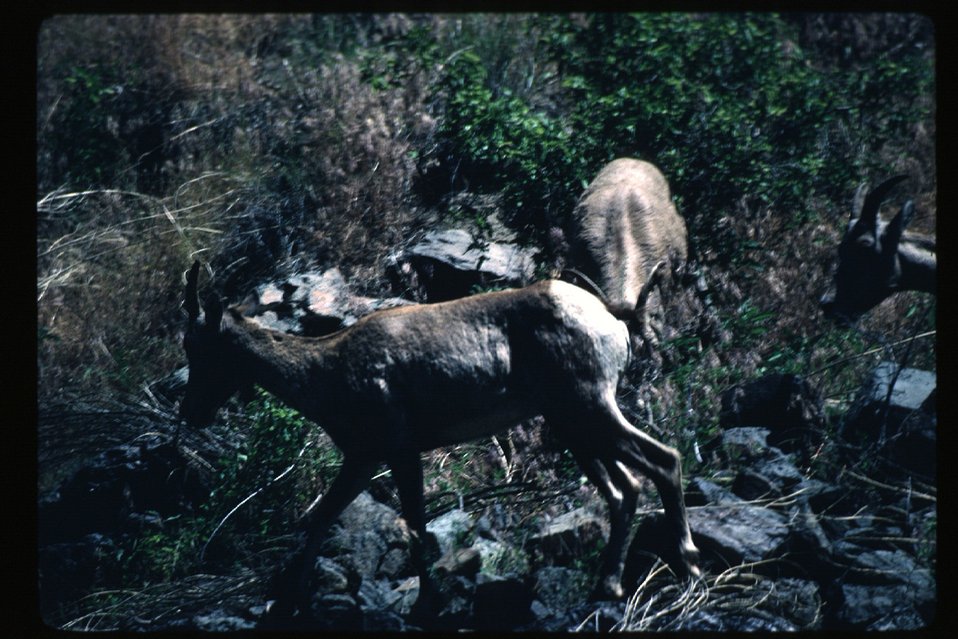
Bighorn sheep UCSC Upper Columbia Salmon Clearwater District